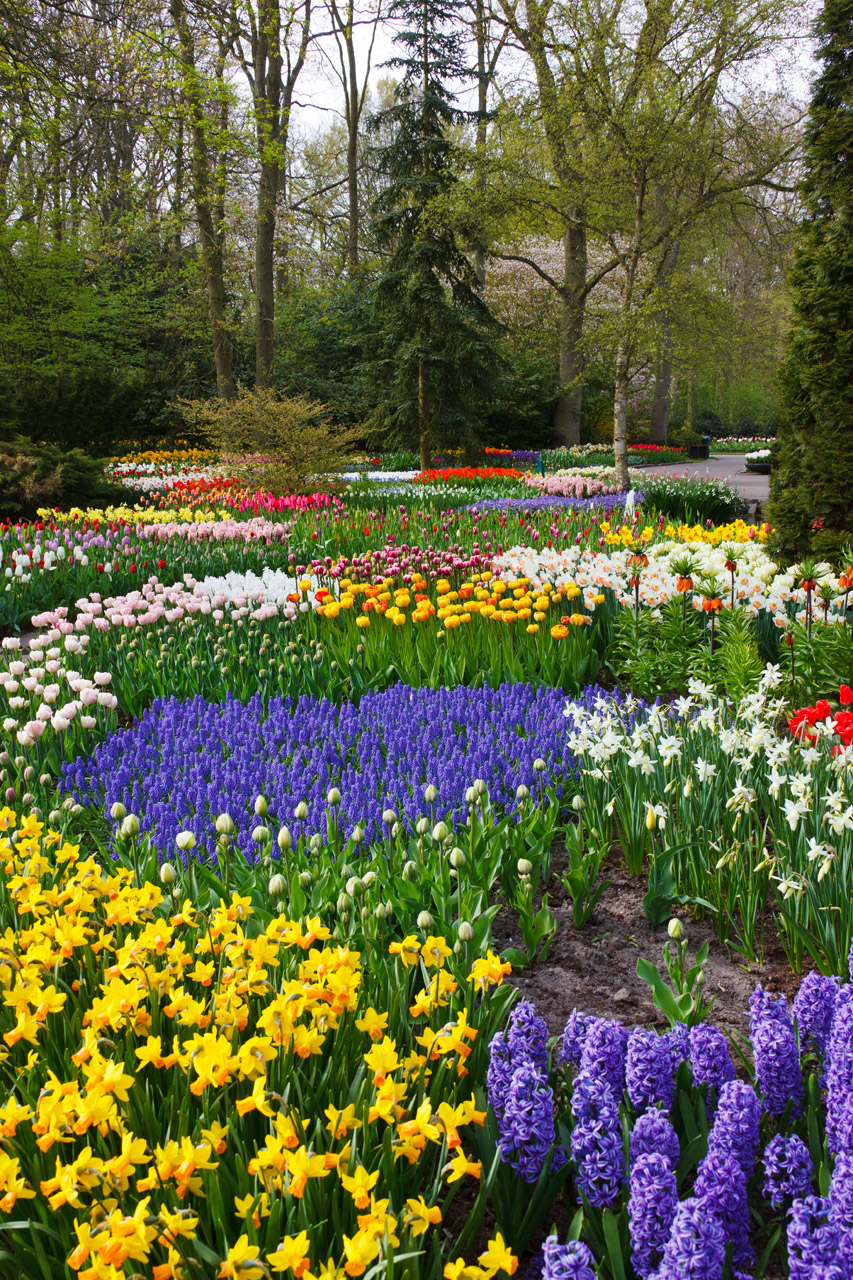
Colorful flower garden

Colorful flower beds of tulips, daffodils and hyacinths in keukenhof gardens.